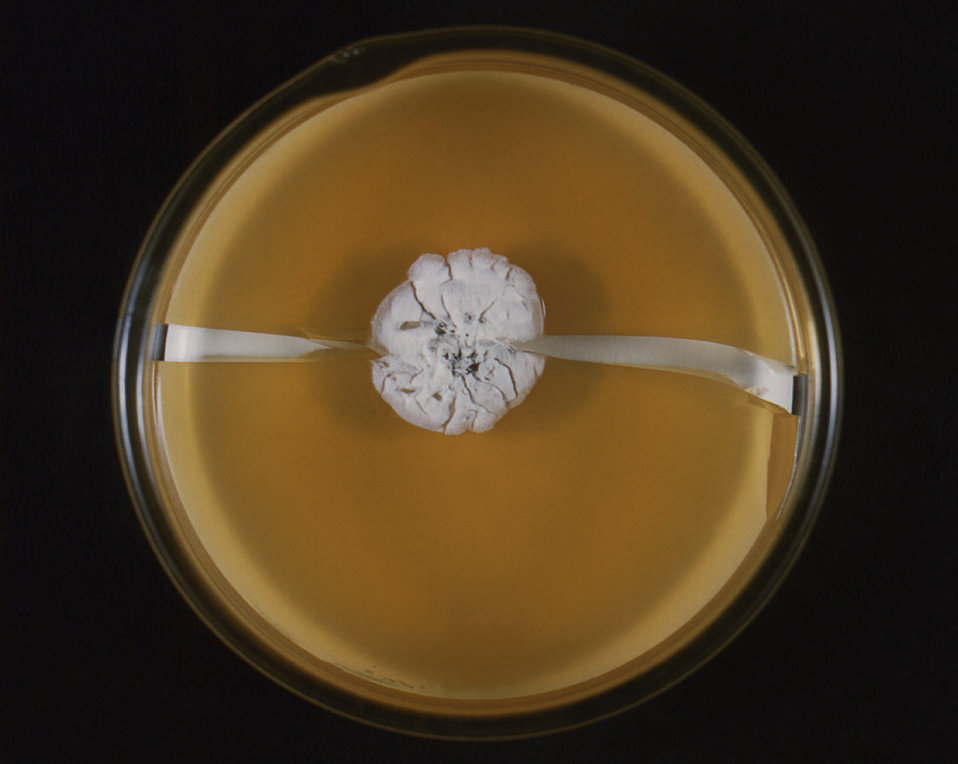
This 1961 photograph depicted a Petri dish in which a colony of Streptomyces somaliensis fungal-like, aerobic bacterial organisms were being cultivated. The particular specie being grown here, S. somaliensis, are found in Africa, the Americas, Israel and India.